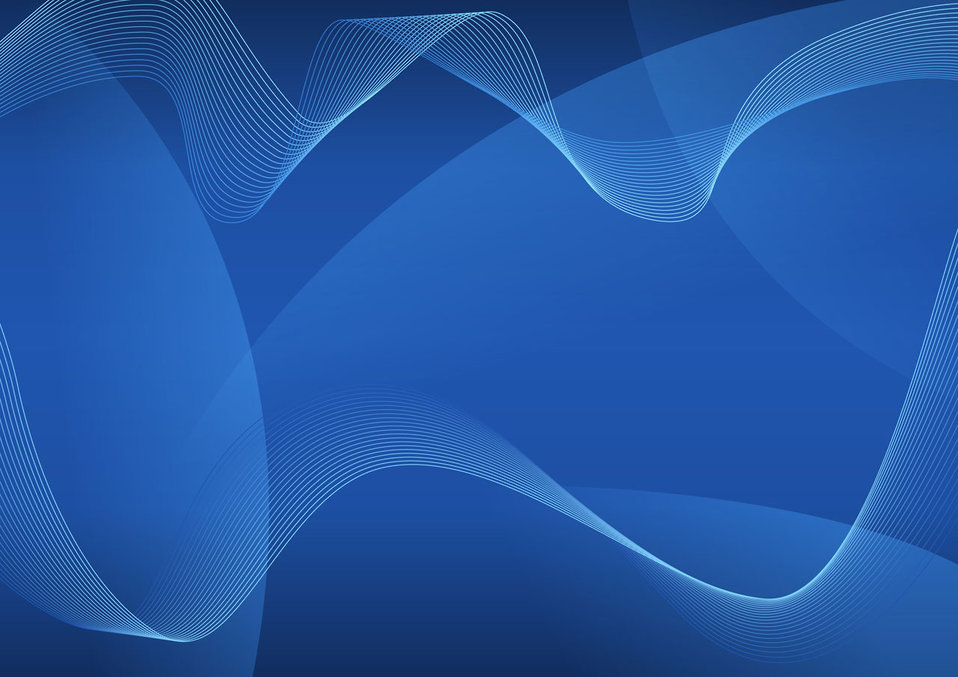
Waves

Abstract waves on a blue background.